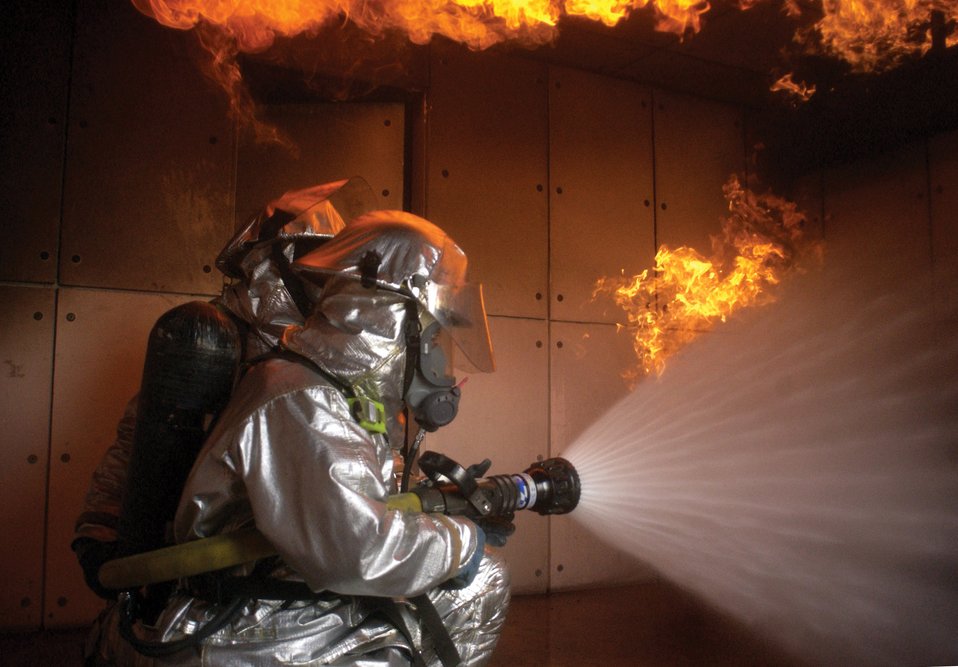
Flameout

ANDERSEN AIR FORCE BASE, Guam -- Airman 1st Class Carlos Torres extinguishes fire in the room of a burn house training facility during an exercise that simulates a burning home. The fire department here conducts live fire training about once a week in a controlled area. Airman Torres is a firefighter with the 36th Civil Engineer Squadron.